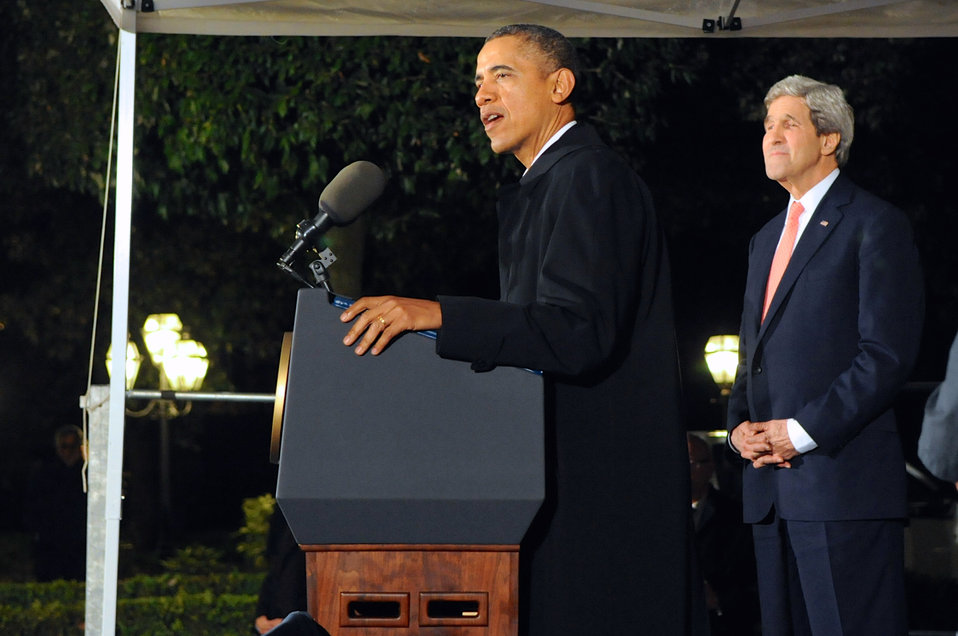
President Obama, Secretary Kerry Address Tri-Mission Rome Staff

President Obama, joined by U.S. Secretary of State John Kerry and U.S. Ambassadors John Phillips, Kenneth Hackett, and David Lane, addresses the Tri-Mission Rome State Department staff to Italy, the Holy See, and UN agencies in Rome on March 27, 2014.